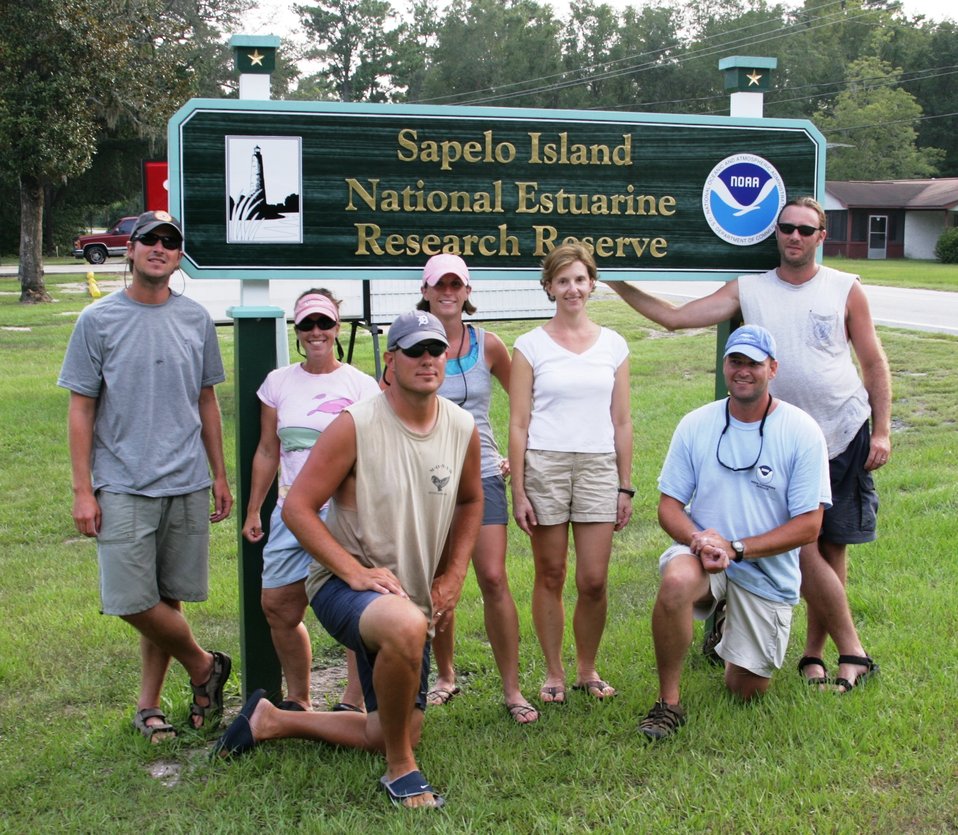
Greetings from the Sapelo Island National Estuarine Research Reserve where NOAA researchers recently conducted dart biopsy sampling of bottlenose dolphins. L-R back: Todd Speakman, Karen Coomer, Sarah Howlett, Lori Schwacke, J. D. Dubick; Front L-R: Eric Zolman, Jamison Smith.